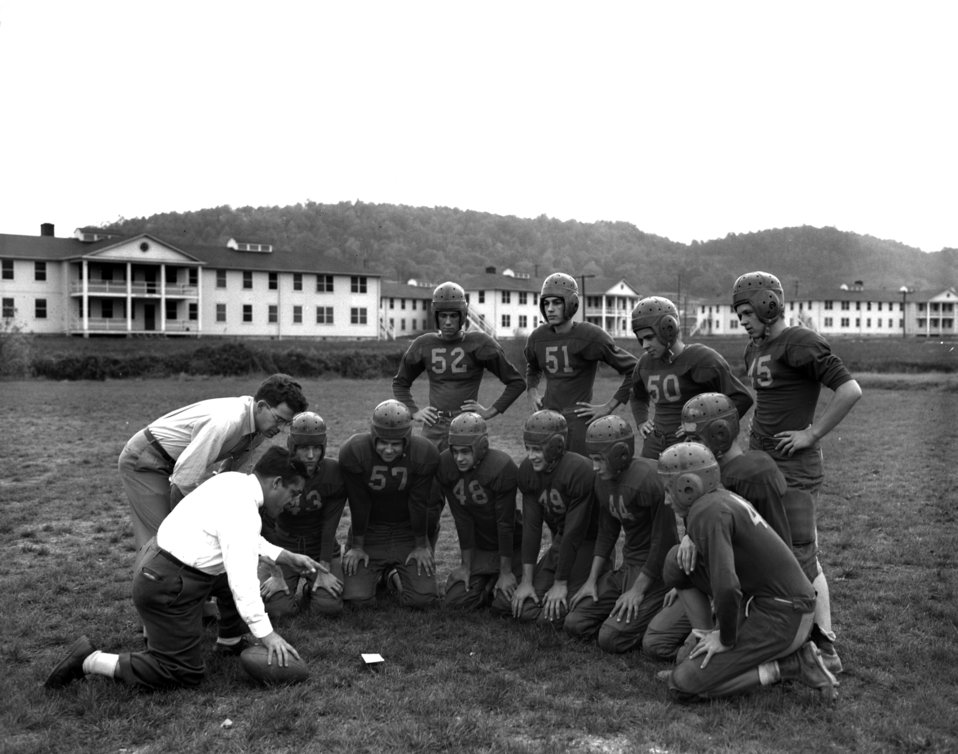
Jefferson High School Football Squad Oak Ridge

003857-5 DOE photo by L. P. Stokes

Jefferson High School Football Squad Coaches Chaney & Orlando Team left to right 1st roll J. Campbell, W. Black, D. Smith, D. Baccus, B. Parsons, B. Coffey, R. Watson
left to right 2nd roll M. Brazeale, R. Williams, L. Mitchell, T. McGrew
Oak Ridge Tennessee 10/31/1947